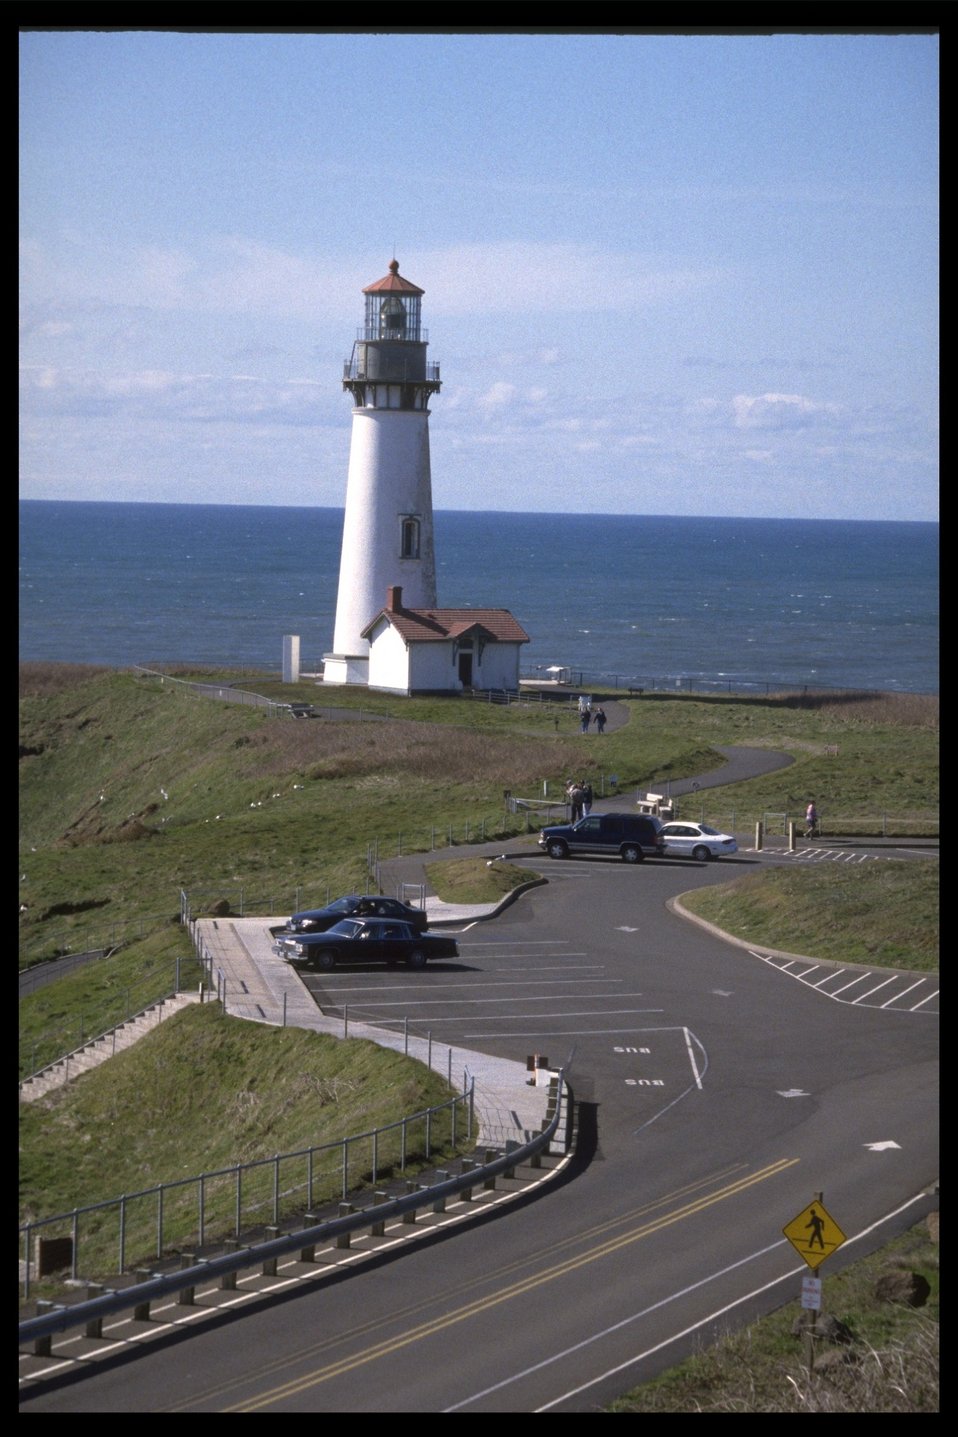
Yaquina Head Lighthouse.